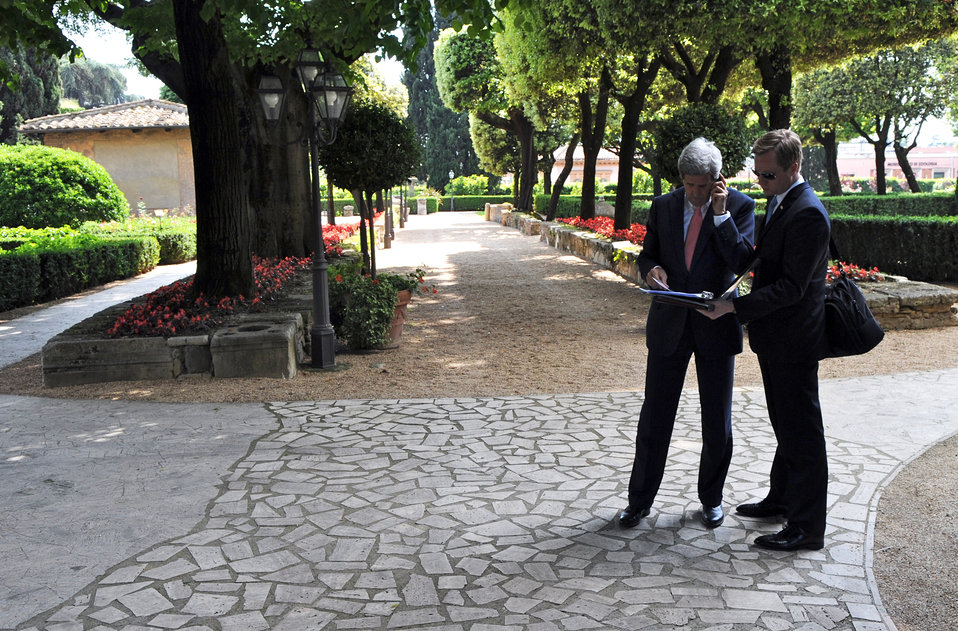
Secretary Kerry Speaks on the Phone

U.S. Secretary of State John Kerry, with the help of senior aide Jason Meininger, speaks on the phone while preparing for a news conference outside the Villa Taverna, the U.S. ambassador's residence in Rome, Italy, on May 9, 2013.